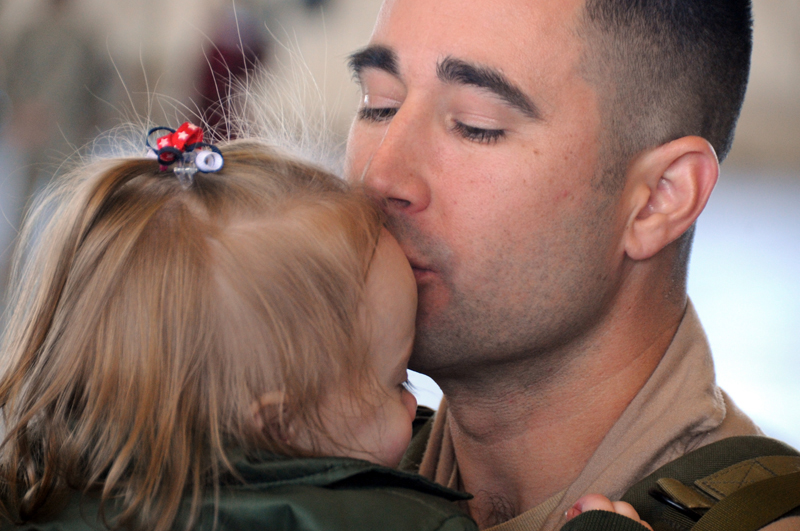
Ellsworth Airmen return home

Maj. Nathan Rowman gives his daughter, Ellaa, a kiss Jan. 27, 2010, at Ellsworth Air Force Base, S.D. While deployed to Southwest Asia, Major Rowman provided support to operations Iraqi Freedom and Enduring Freedom. Major Rowman is a 37th Bomb Squadron B-1B Lancer pilot.